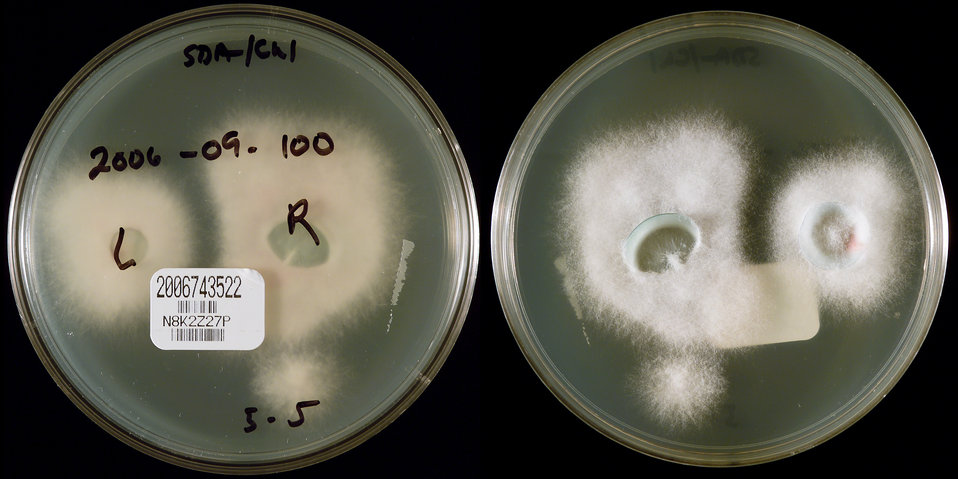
This image depicted two sides of a Petri dish, which had been inoculated with specimens consisting of the right and left contact lenses, visible on the culture medium, obtained from a Missouri Fusarium keratitis-patient, and had subsequently grown a filamentous colony of Fusarium oxysporum fungal organisms. The type of agar medium in the case of this specimen was Sabouraud Dextrose (SAB). While it is not unusual for Fusarium to cause keratitis, it was the number of affected individuals, which had increased dramatically, predominantly in persons wearing contact lenses, that had warranted this epidemiologic study. The laboratory received cultures which came from two sources: Fusarium spp. isolated from the eyes of patients with fungal keratitis, and cultures from contact lenses, cases and/or lens solution.